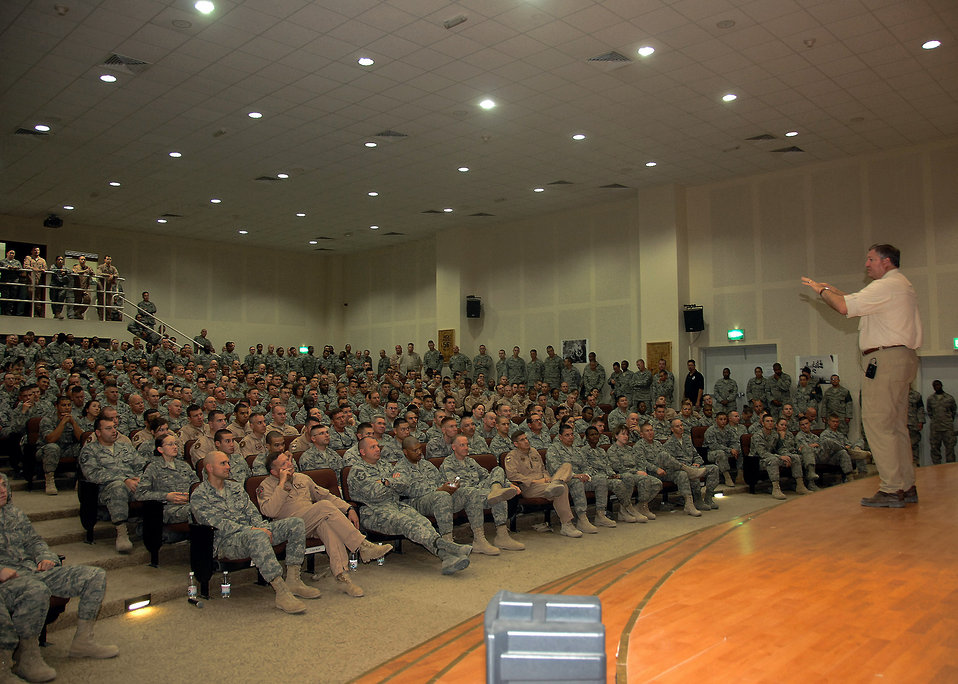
386th AEW welcomes SECAF

386th Air Expeditionary Wing Airmen listen as Secretary of the Air Force Michael B. Donley talks to them about the future of the Air Force Oct. 14 at an air base in Southwest Asia. Secretary Donley visited with Airmen from the 386th Air Expeditionary Wing, coalition partners and sister services during his visit.